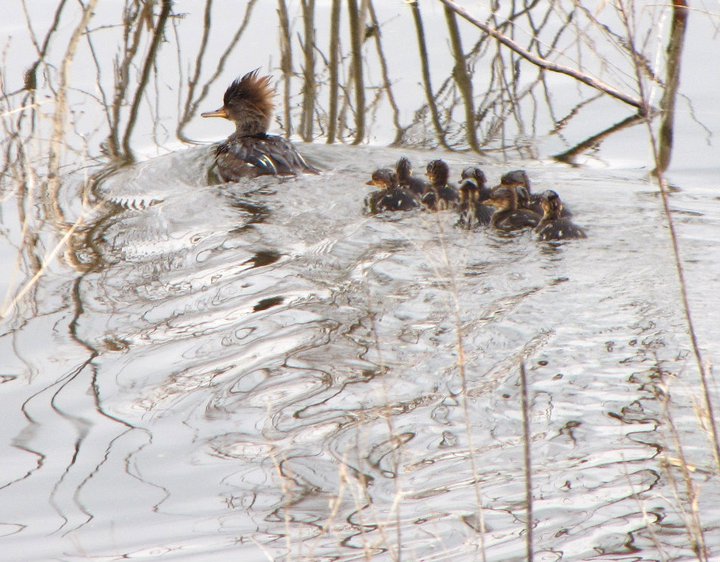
hooded merganser

Port Louisa National Wildlife Refuge